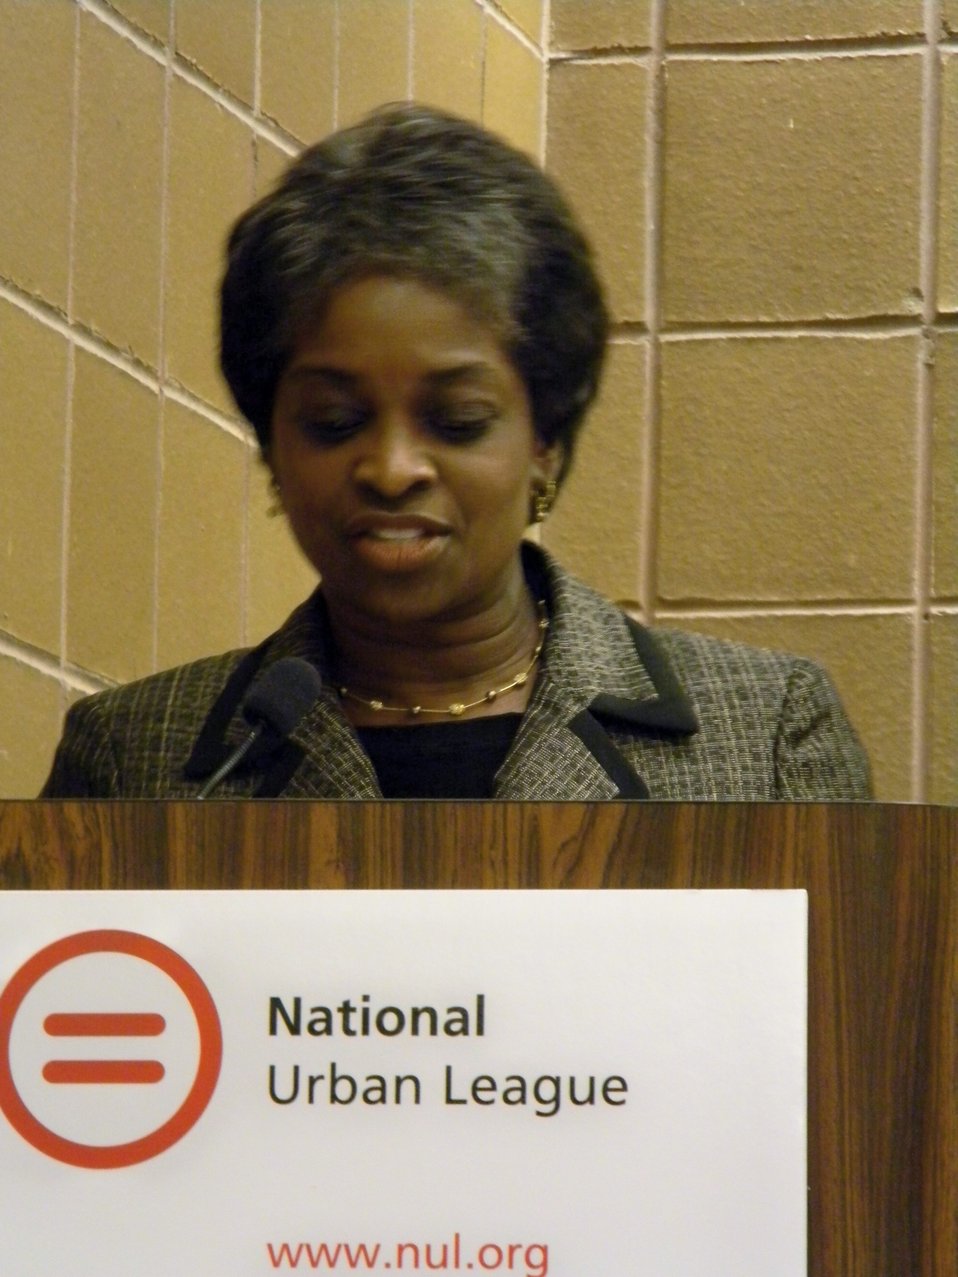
2012 National Urban League Conference

Commissioner Mignon Clyburn, panelist on the the Job Creation and Education: Programmatic Efforts to Increase Broadband Adoption in African American Communities panel.